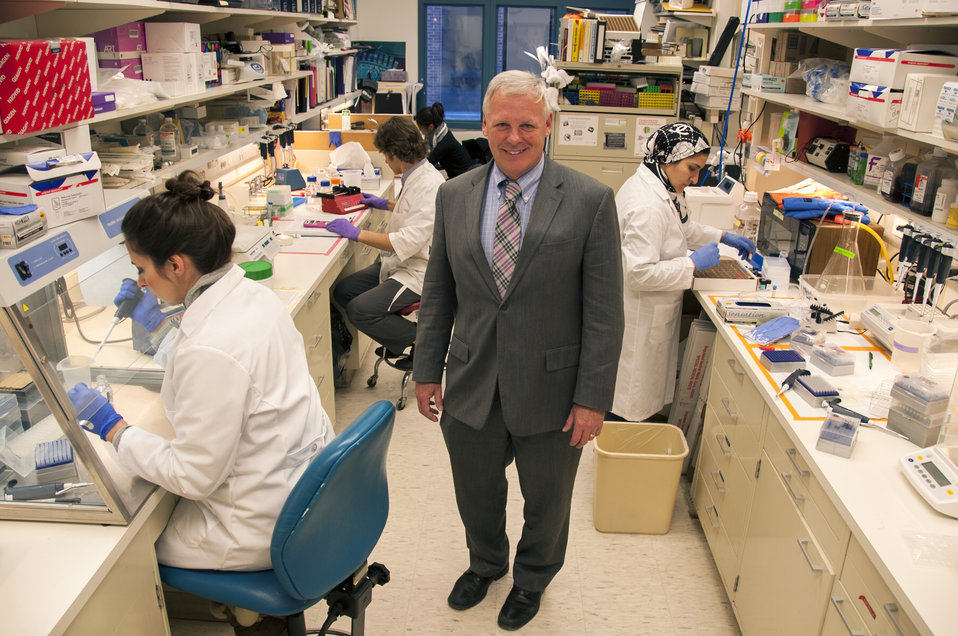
Stem Cell Research (0498)

Steven Bauer, Ph.D., chief of the Cellular and Tissue Therapy Branch in FDA’s Office of Cellular Tissue and Gene Therapies (standing), visits his team of scientists in an FDA laboratory on the National Institutes of Health campus in Bethesda, Md.

To learn more about stem cell research, read this FDA Consumer Update:

Adult Stem Cell Research Shows Promise

This photo is free of all copyright restrictions and available for use and redistribution without permission. Credit to the U.S. Food and Drug Administration is appreciated but not required.

Privacy and use information: www.flickr.com/people/fdaphotos/